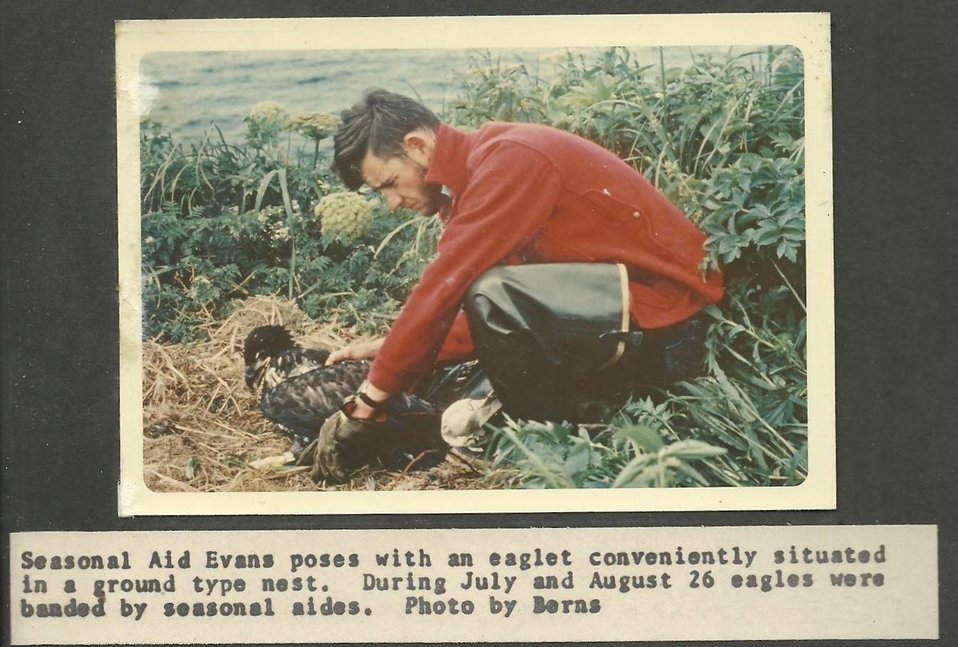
(1966) The Aide and the Eaglet

Credit: USFWS

Source and Contact: Kodiak National Wildlife Refuge